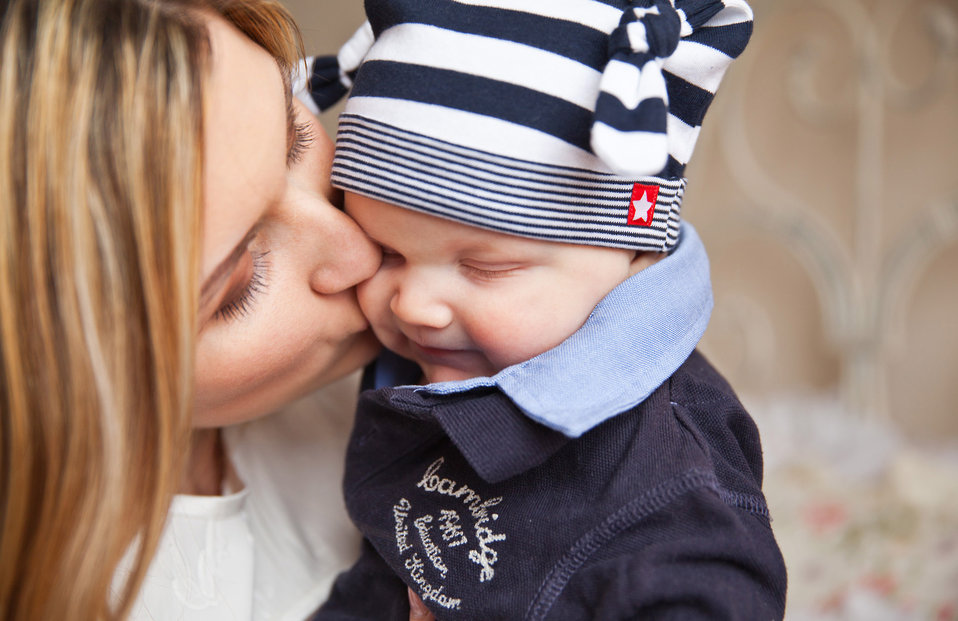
Mother kiss, mom kiss, tenderness.